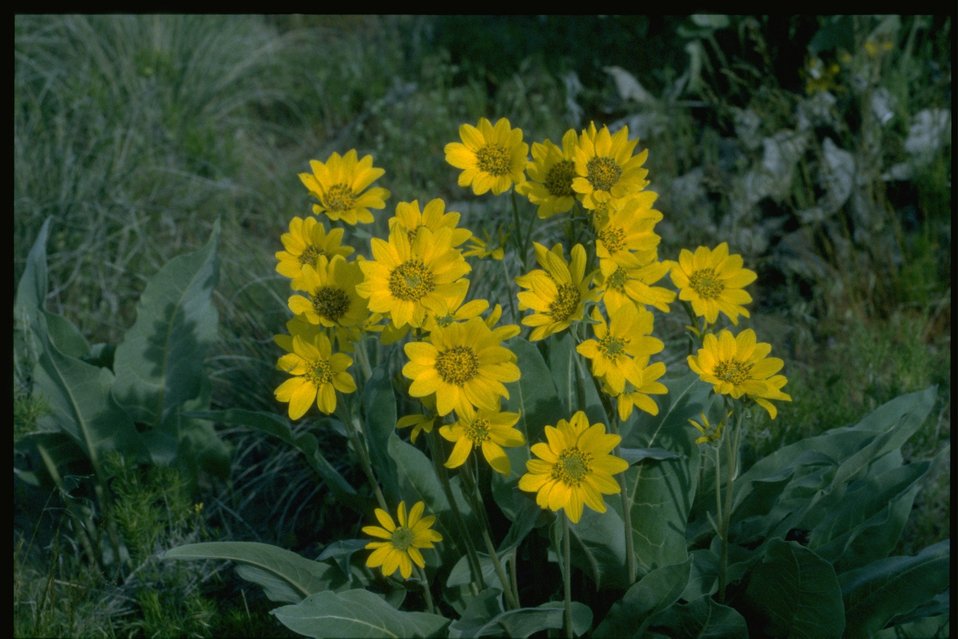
Medium shot of Arrowleaf Balsam Root (Balsamorhiza sagittata).